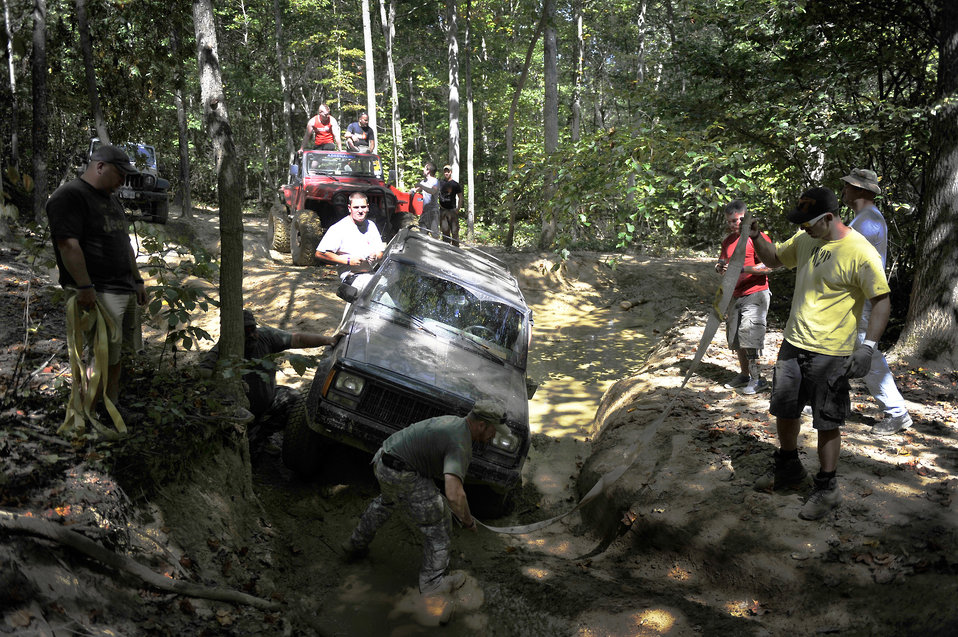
Wounded Warrior Care

Staff Sgt. John Purser, right, together with wounded warriors and volunteers prepare to pull a jeep out of a ditch during an off-road event in Gore, Va., Sept. 15, 2012. Purser, who is the president of 4 Wheel To Heal, is assigned to the command post of the 113th Wing, Joint Base Andrews, Md.